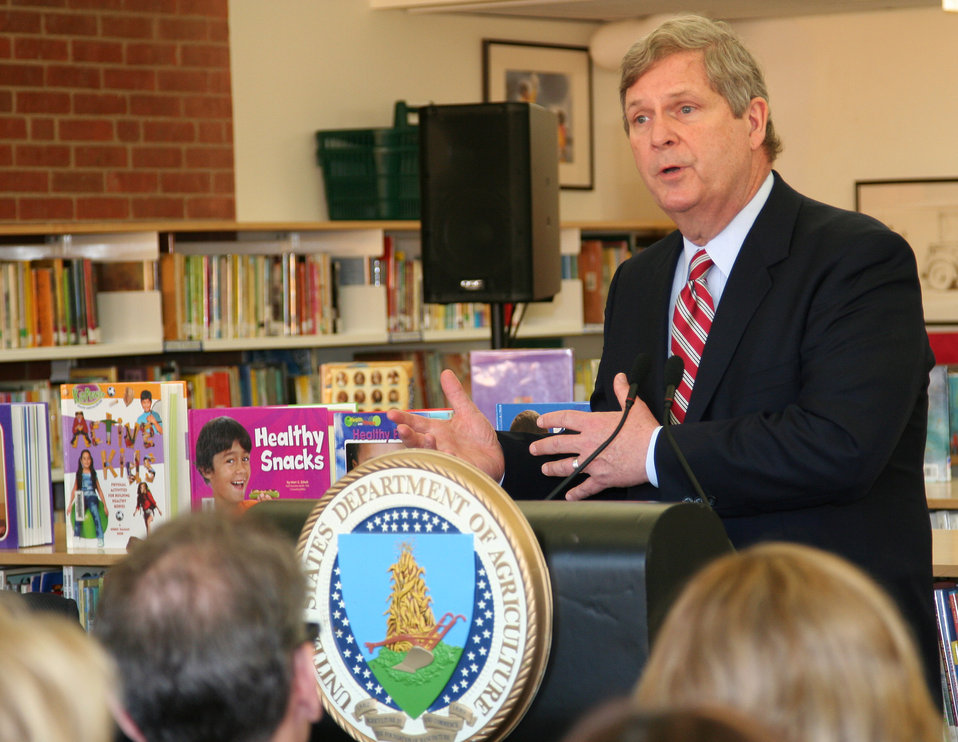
Agriculture Secretary Tom Vilsack outlines USDA efforts to raise a healthier generation of Americans and highlights efforts to improve school meals during his visit to the Henry A. Wolcott Elementary School in West Hartford, Connecticut to outline the U.S. Department of Agriculture (USDA) efforts to raise a healthier generation of Americans on Friday, April 5, 2013.